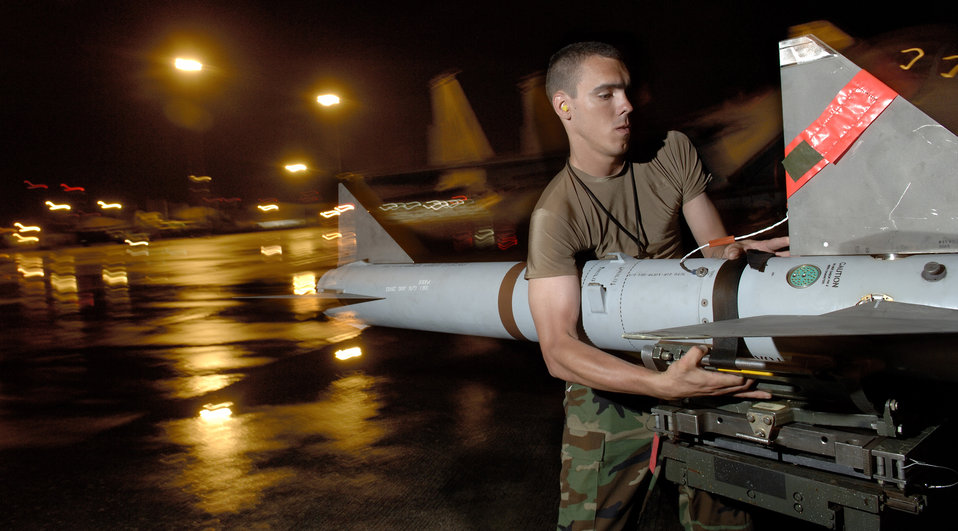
AIM-7

Staff Sgt. David Trosper moves an AIM-7M Sparrow missile into position on a weapons loader during a weapon systems evaluation at Tyndall Air Force Base, Fla., on Tuesday, May 9, 2006. The evaluation provides pilots, maintainers and weapons loaders experience with combat-ready weapons.